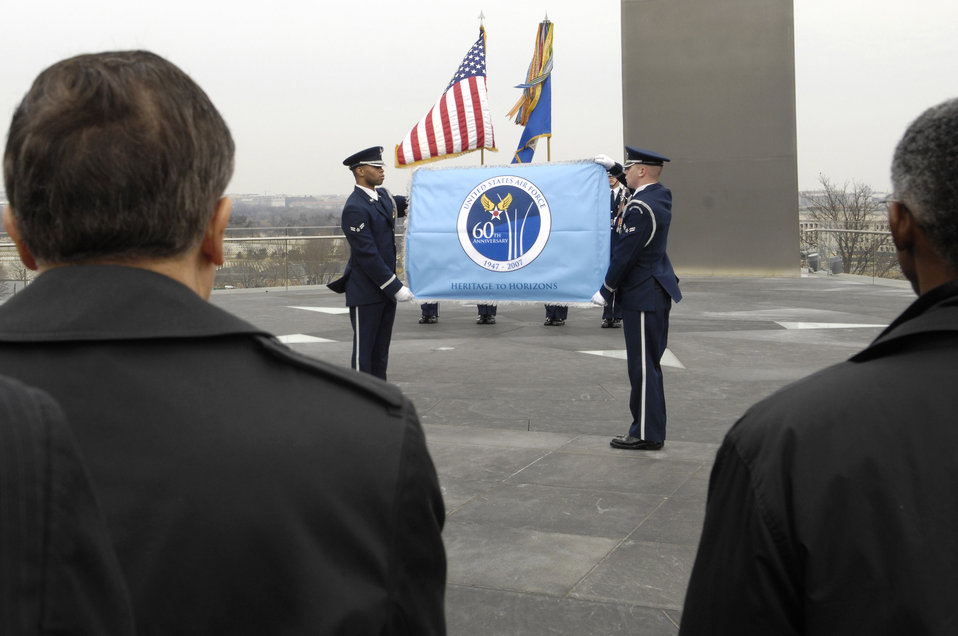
Air Force 60th Anniversary flag raised at memorial

Members of the U.S. Air Force Honor Guard display the Air Force's 60th Aniversary flag during a ceremony at the Air Force Memorial March 1 in Arlington, Va. The flag will fly at the memorial until the service's 60th birthday Sept. 18.